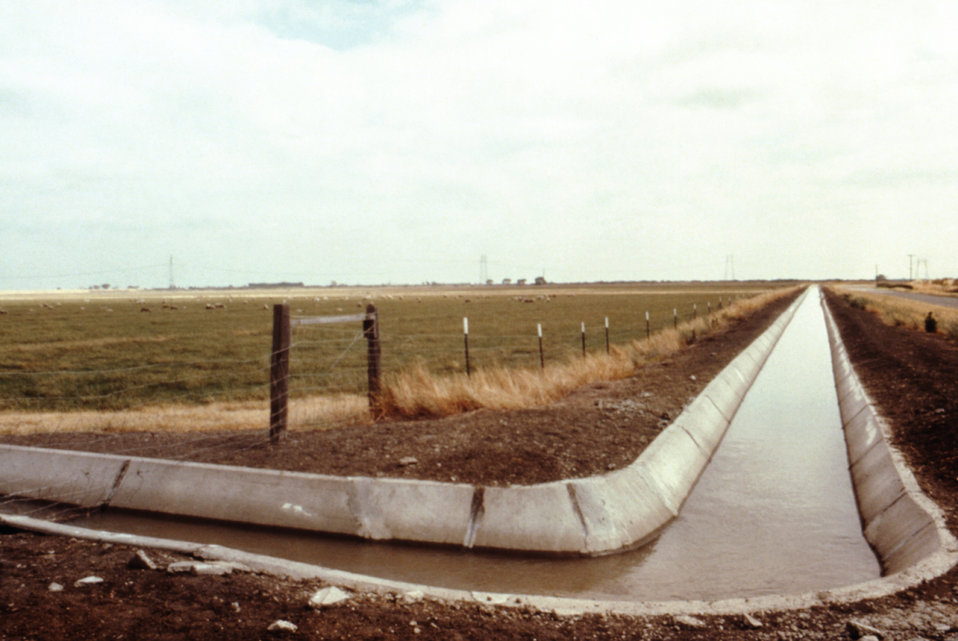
This is a 1976 photograph of a concrete-lined irrigation distribution canal located in California.